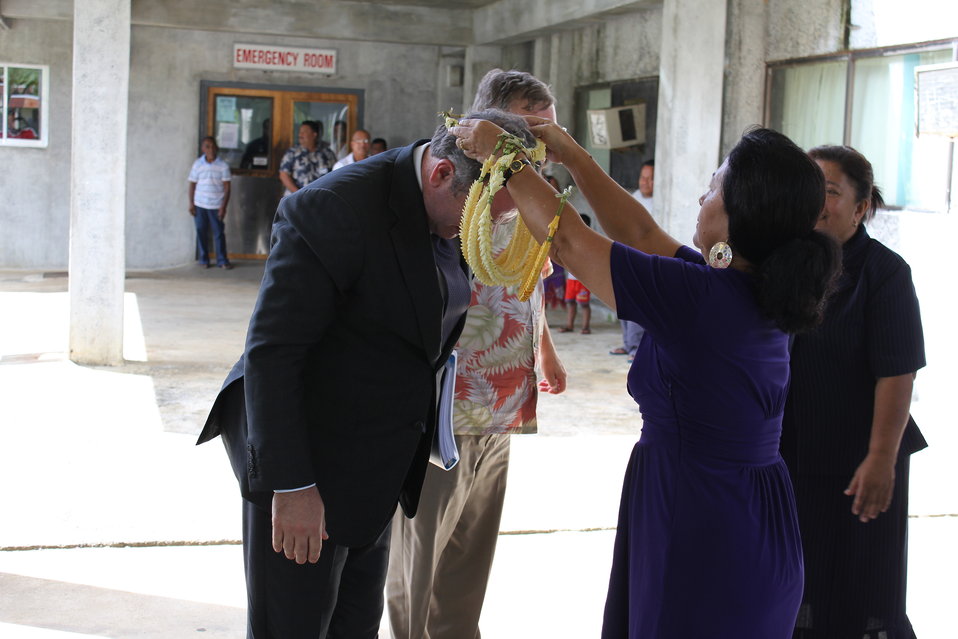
Assistant Secretary Campbell Arrives at Pohnpei State Hospital

Assistant Secretary of State for East Asian and Pacific Affairs Kurt Campbell is greeted by Pohnpei State Governor John Ehsa and Director of Health Services Dr. Elizabeth Keller at the Pohnpei State Public Hospital in Palikir, Pohnpei, on July 1, 2011.